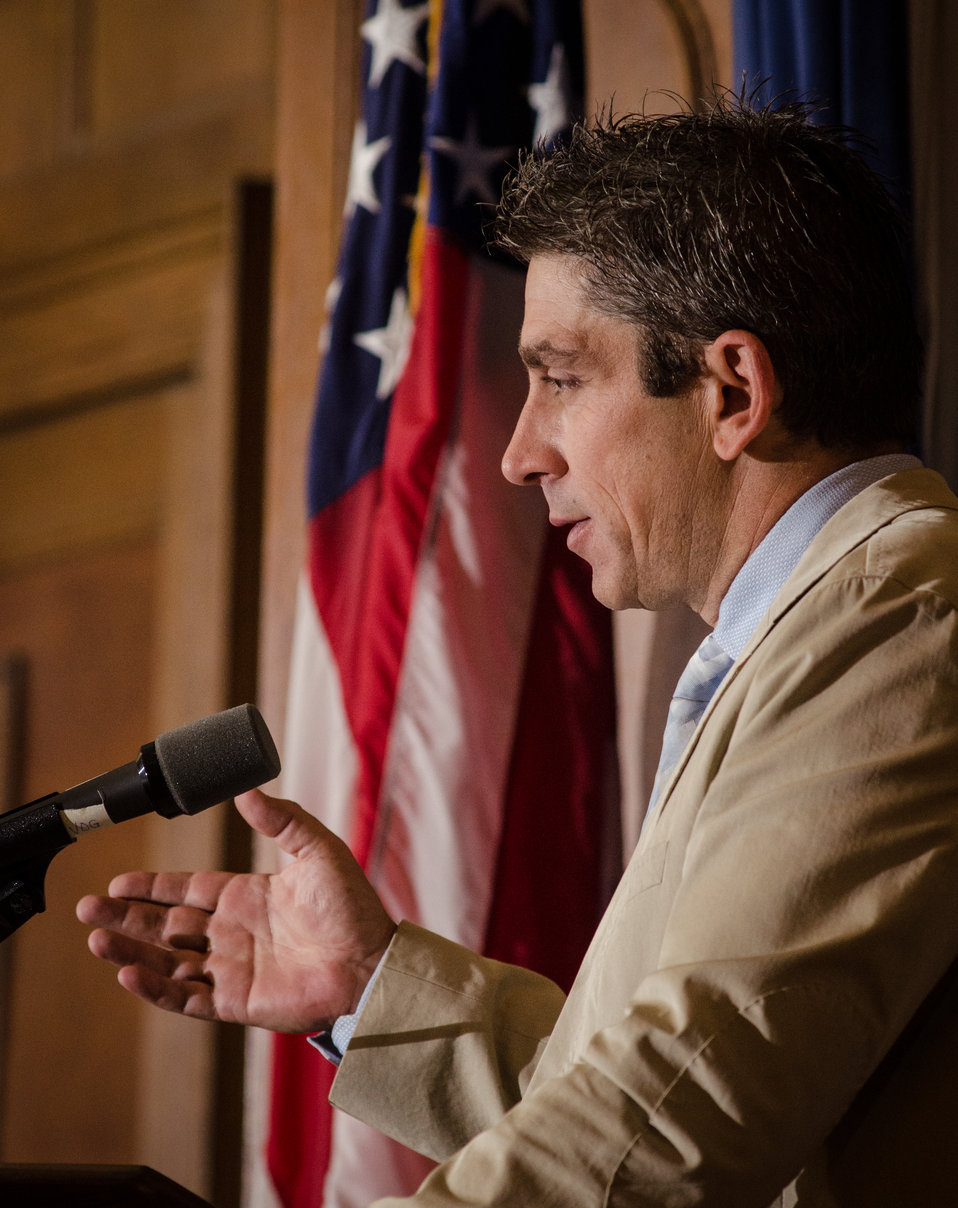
Keynote Speaker Poet Richard Blanco talks about differences in culture, language, and his childhood,at the 2013 National Hispanic Heritage Month ”Hispanics: Serving and Leading our Nation with Pride and Honor,” on Thursday, Sept. 19, 2013, in the Jefferson Auditorium, USDA Headquarters, Washington, D.C. Mr. Blanco stands as the youngest, first Latino, and first openly gay person to serve as the Presidential inaugural poet, on January 21 of this year.